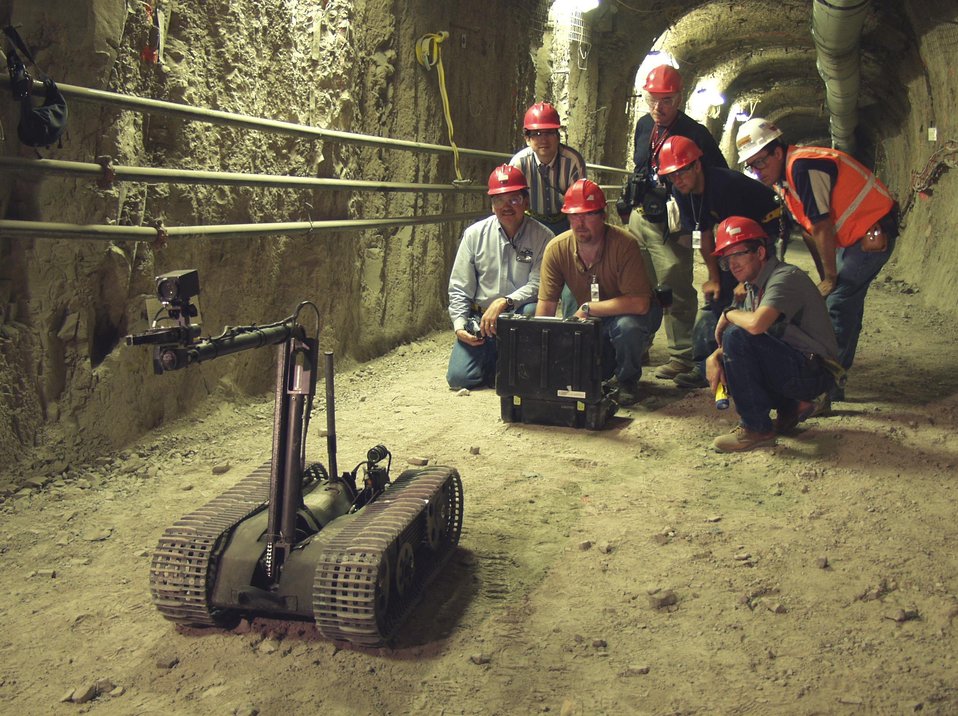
ROBOT, EQUIPPED WITH VIDEO CAMERAS ROLLS ACROSS THE FLOOR OF THE YUCCA MOUNTAIN EXPLORATORY STUDIES FACILITY.

DOE'S OFFICE OF CIVILIAN RADIOACTIVE WASTE MANAGEMENT IS EXPERIMENTING WITH ROBOTIC TECHNOLOGIES FOR YUCCA MOUNTAIN. THE SITE IS BEING EVALUATED FOR SUITABILITY AS THE NATION'S FIRST REPOSITORY FOR HIGH LEVEL NUCLEAR WASTE. STUDIES INCLUDE SURFACE TESTING OF ROCK, SOIL SAMPLES AND WATER MOVEMENT, SUBSURFACE ROCK TESTING AT DEEP LEVELS AND LABORATORY ANALYSIS OF SAMPLES.